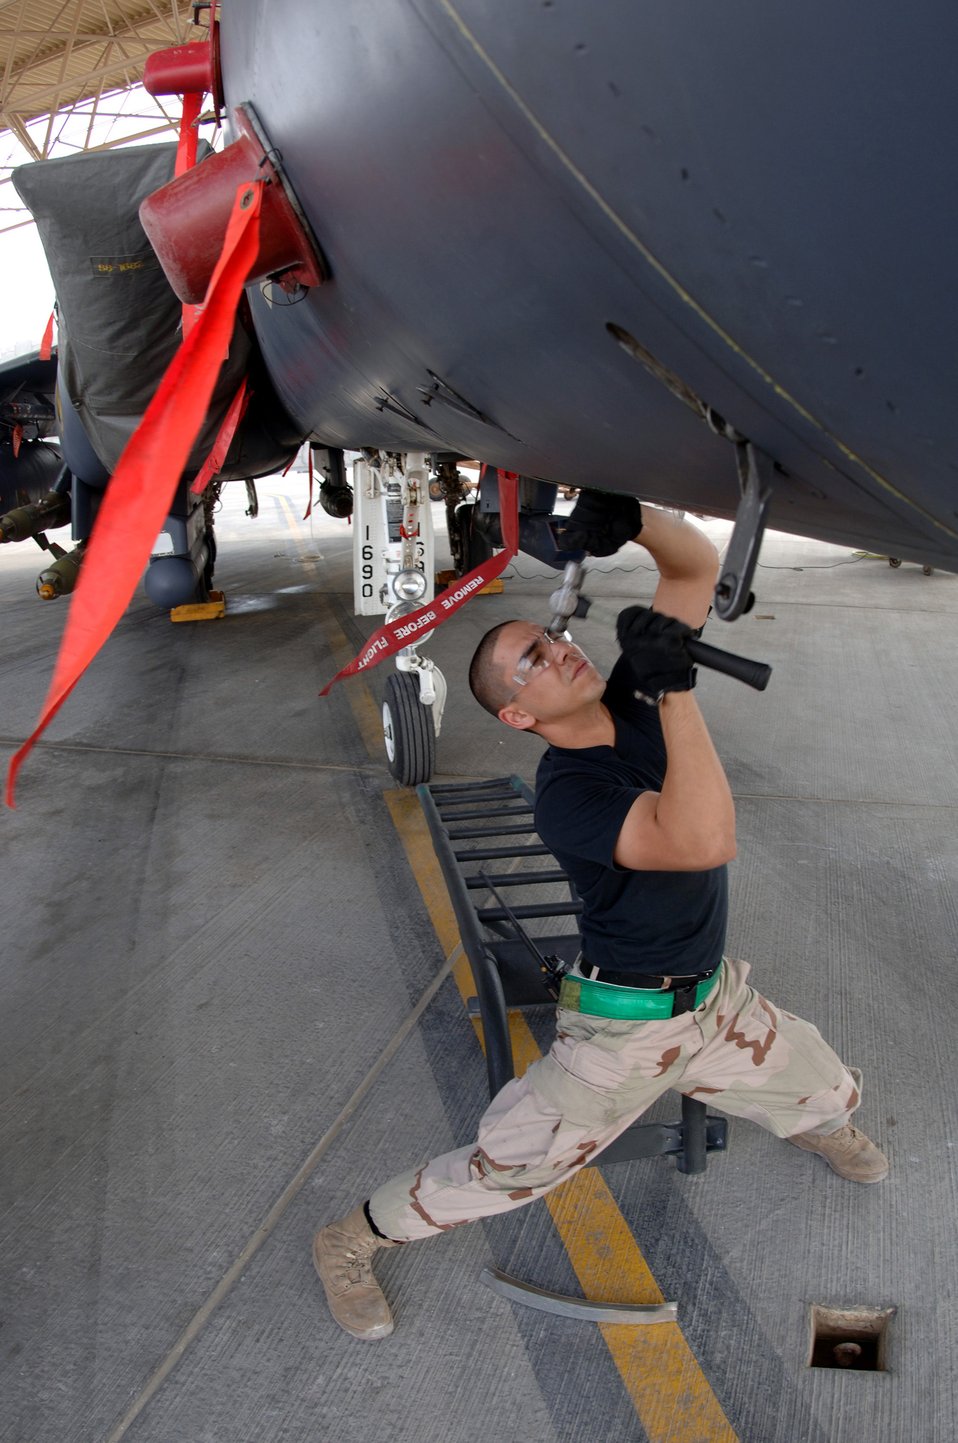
Deployed F-15s

An Airman with the 379th Expeditionary Maintenance Squadron works on an F-15E Strike Eagle at a forward-deployed location in Southwest Asia, on Wednesday, April 5, 2006. The F-15E is a dual-role fighter designed to perform air-to-air and air-to-ground missions. It is deployed from Seymour Johnson Air Force Base, N.C.